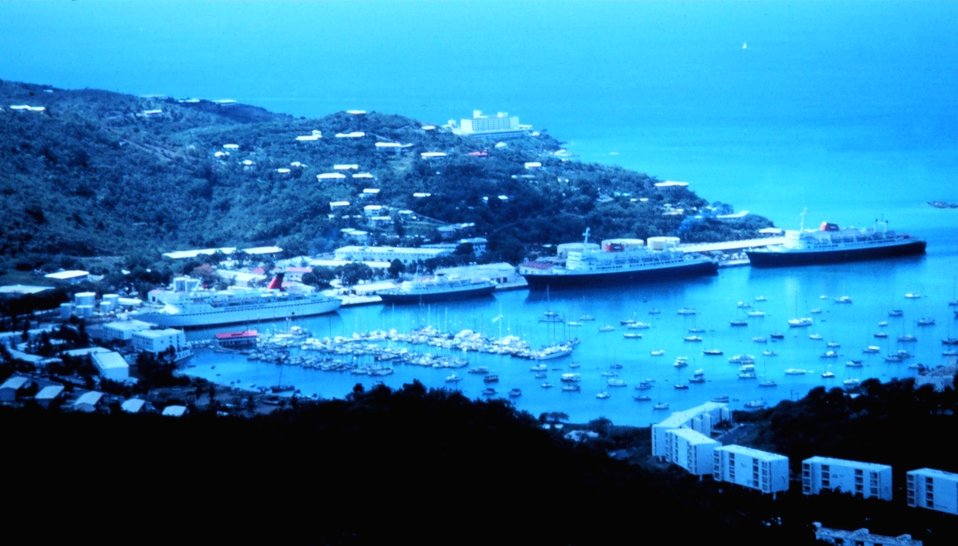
Cruise ships in the harbor at Charlotte Amalie